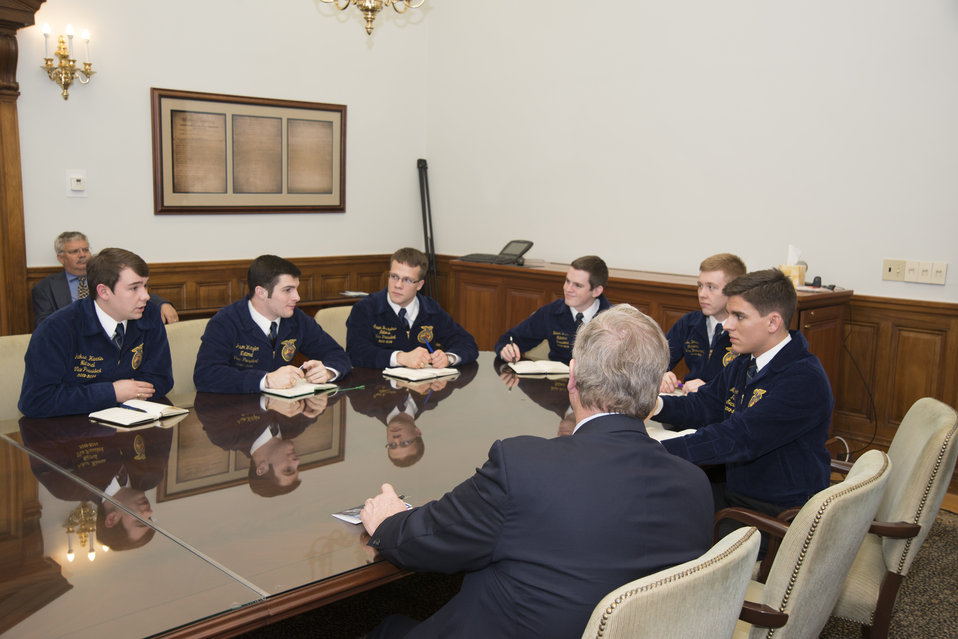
Agriculture Secretary Tom Vilsack meets with National FFA officers at the U.S. Department of Agriculture (USDA), Whitten Building in Washington, DC, on Wednesday, Jan.15, 2014. (L to R Southern Region Vice President Jackson Harris, Western Region Vice President Jason Wetzler, Central Region Vice President Steven Brockshus, President Brian Walsh, Eastern Region Vice President Wes Davis, and Secretary Mitch Baker).